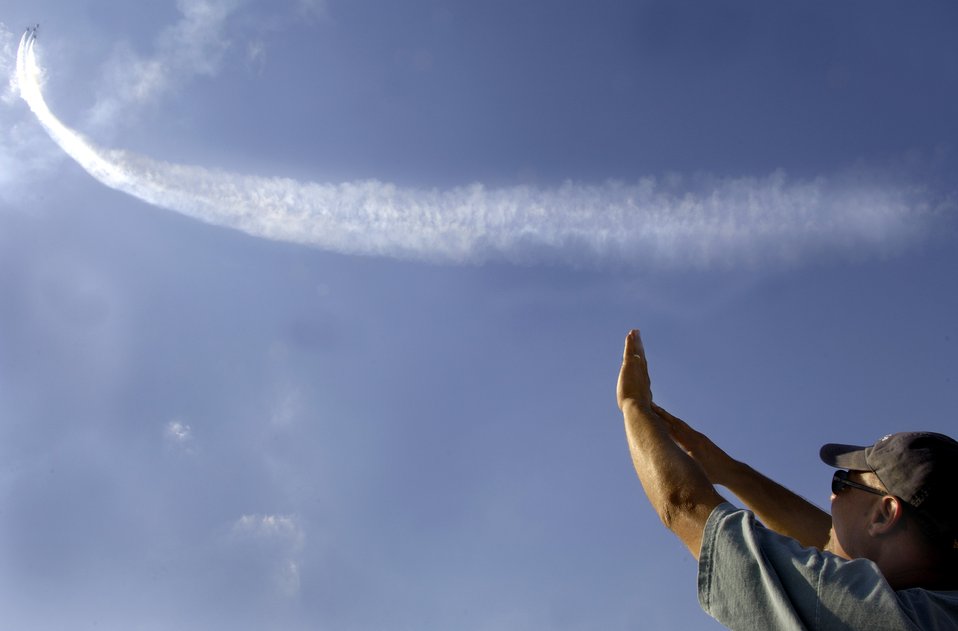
Air Power Over Hampton Roads Air Show 2006

Michael Smith, a resident of Yorktown, Va., shields his eyes from the sun while trying to watch the Air Force's elite aerial demonstration team, the Thunderbirds, on Saturday, May 6, 2006 at the Air Power Over Hampton Roads Airshow at Langley Air Force Base, Va.